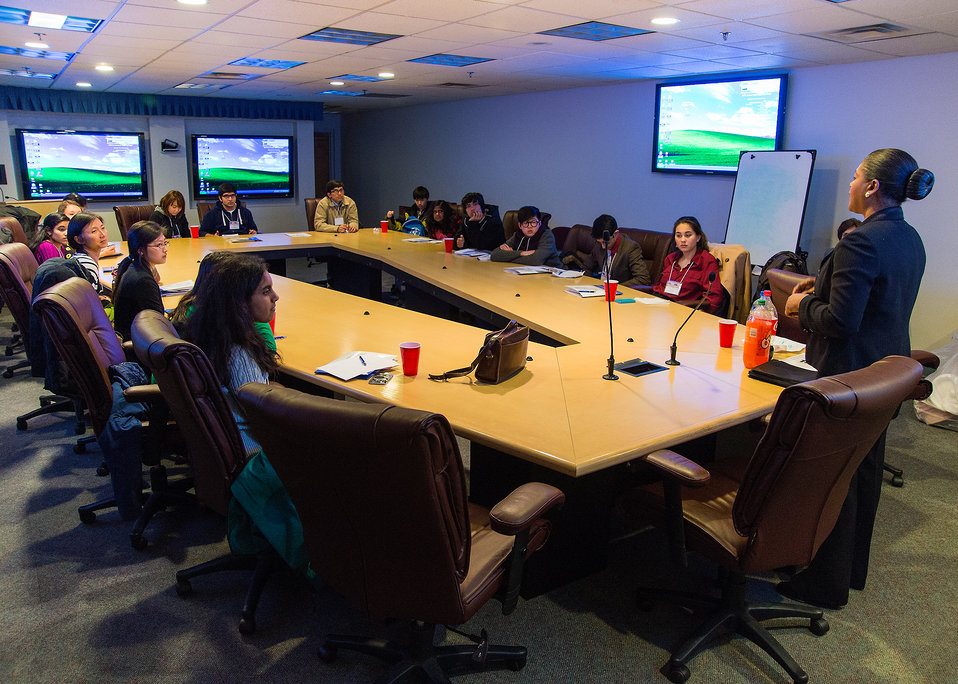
Yvonne Jackson, Associate Chief Information Officer offered closing remarks at the U.S. Department of Agriculture (USDA), IT Job Shadow Day where students from the Thomas Jefferson High School of Science and Technology, Alexandria, VA were offered discussions with IT professionals and agricultural specialists from a variety of mission areas of USDA in Washington, D.C. Tuesday, Mar. 25, 2014.